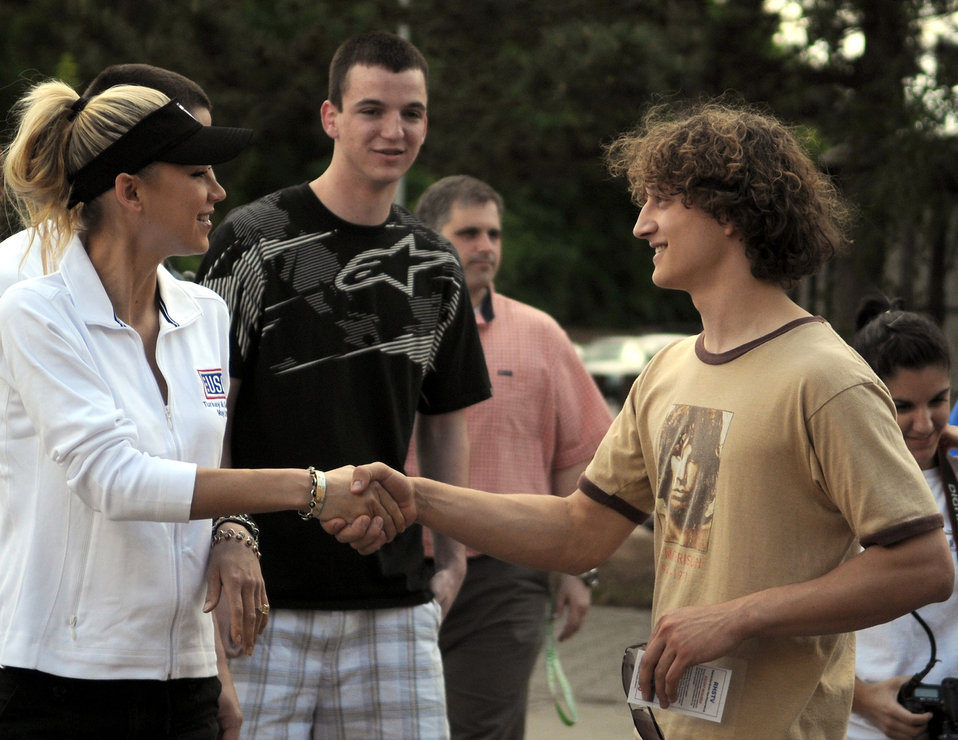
Anna Kournikova visits Ramstein students

Anna Kournikova (left) greets Ramstein High School students May 19 at Ramstein Air Base, Germany. She talked to them about school, her tennis career and working hard. Ms. Kournikova, a former professional tennis player, visited with students as part of a six-day educational United Service Organizations tour.